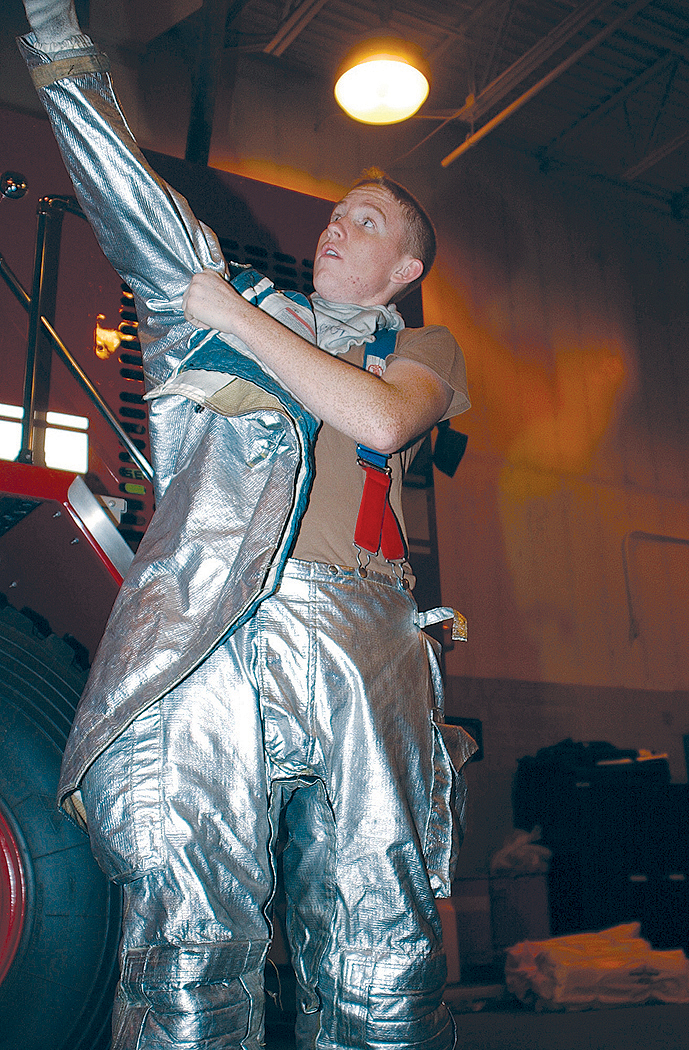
Carpenter

EIELSON AIR FORCE BASE, Alaska -- Airman Bryan Carpenter gets into his fire-protection gear during a fire department exercise here. Carpenter responded to a real-world fire here Sept. 7. He is a firefighter assigned to the 354th Civil Engineer Squadron.